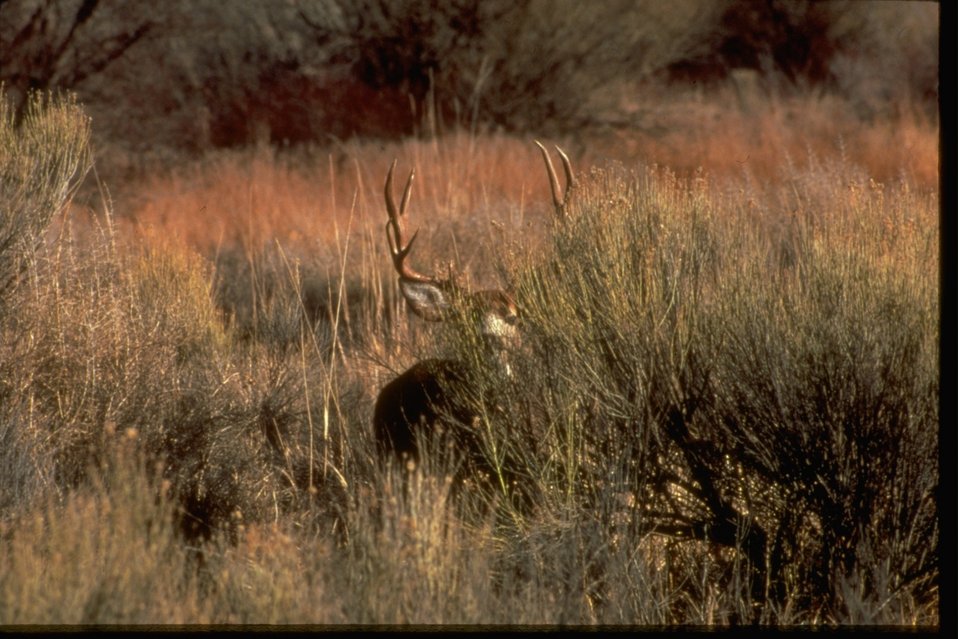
Buck deer laying in the brush.